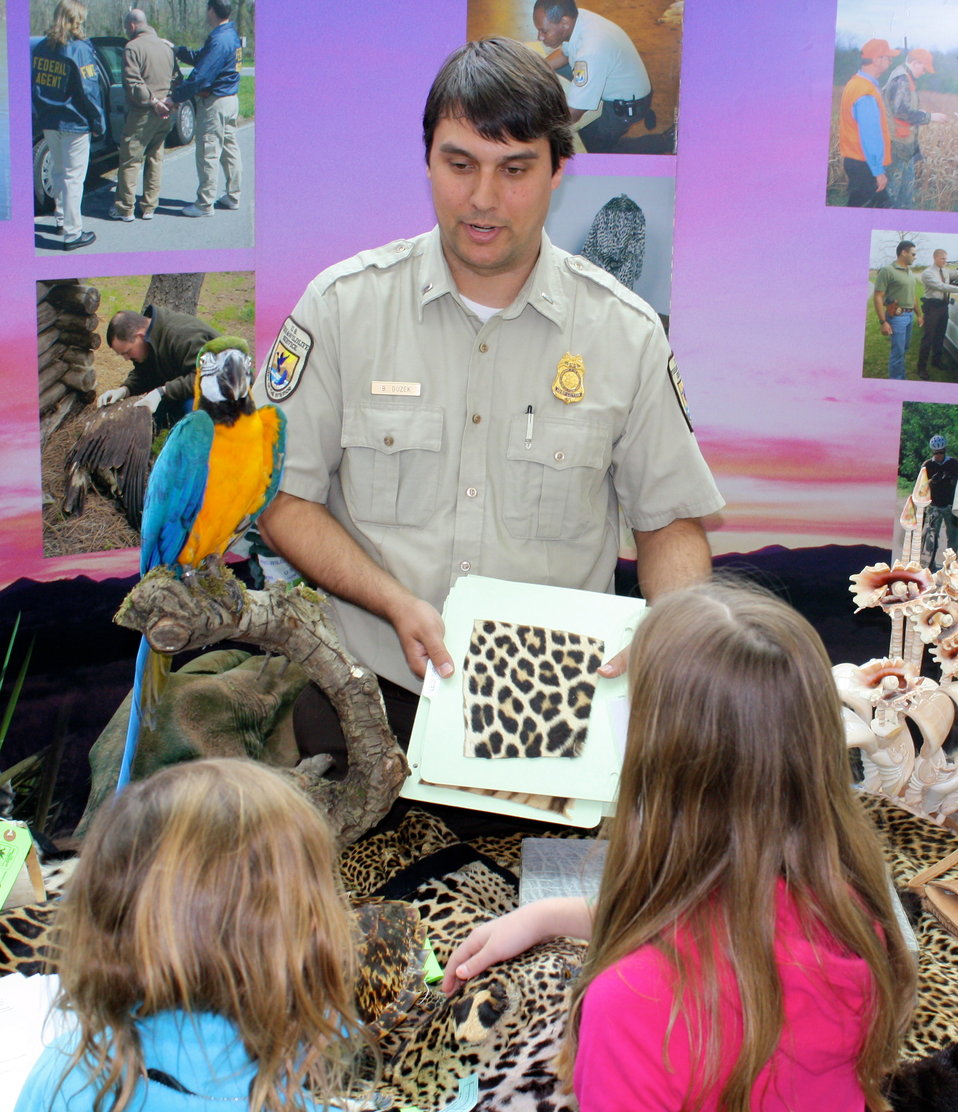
Wildlife Inspector explaining furs